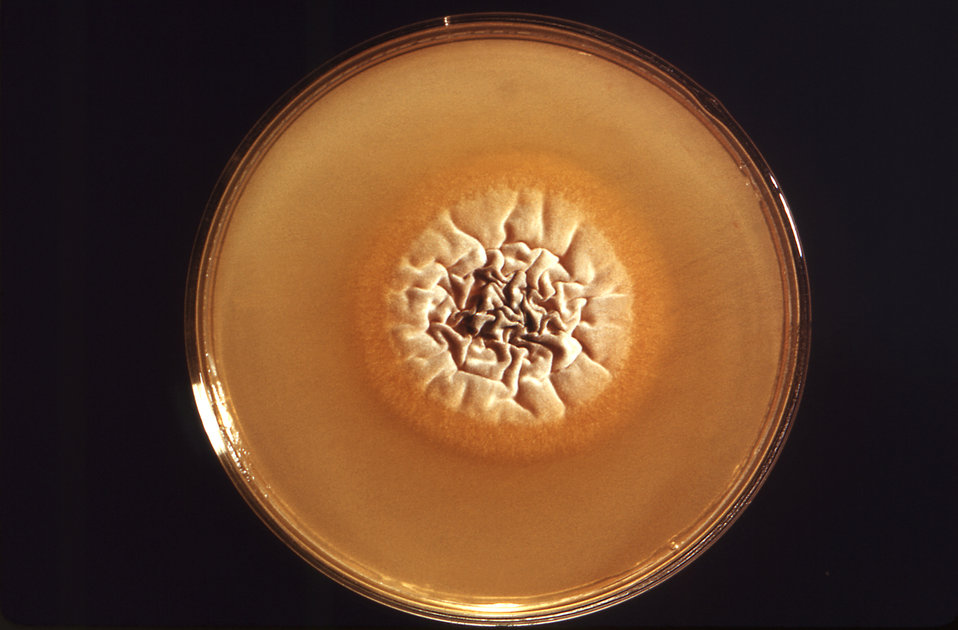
This is a front view of a Petri dish culture plate that had cultivated a large colony of an atypical strain of the dermatophytic fungus, Trichophyton mentagrophytes. The colony displayed a morphology consisting of a red-orange coloration, and a highly folded lighter-colored beige central region. T. mentagrophytes colonial coloration ranges from white to bright yellowish-beige, to red-violet.